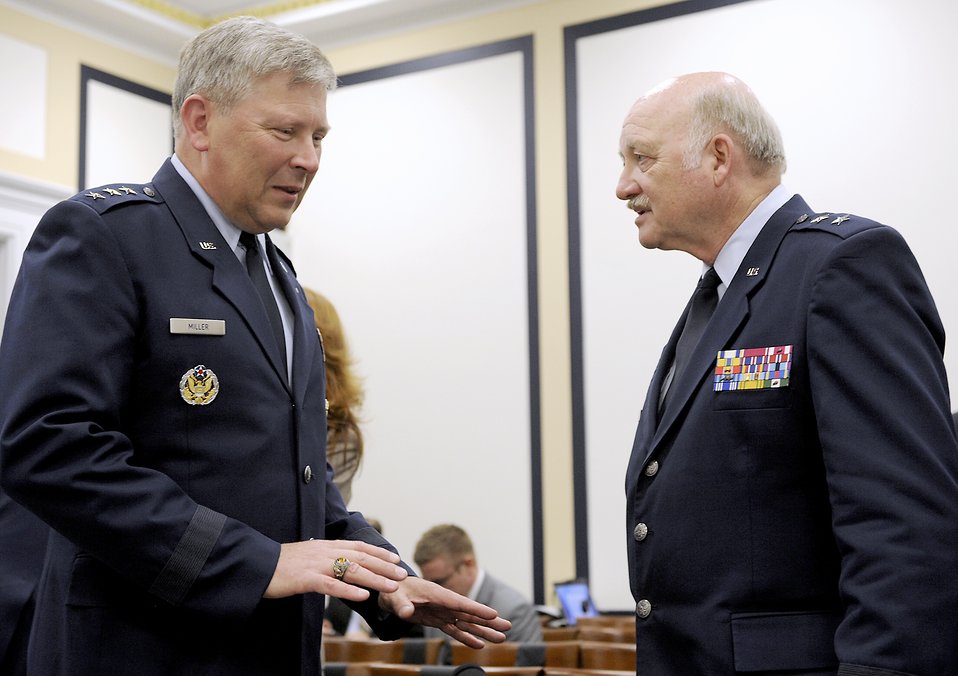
House Armed Services Committee

Lt. Gen. Christopher Miller, Deputy Chief of Staff for Strategic Plans and Programs, Headquarters, U.S. Air Force, speaks with Maj. Gen. Timothy Lowenberg, the Adjutant General, Washington, and commander of all Washington Army and Air National Guard forces, prior to a hearing before the House Armed Services Committee on Air Force aircraft force structure reductions, in Washington, D.C., July 12, 2012,